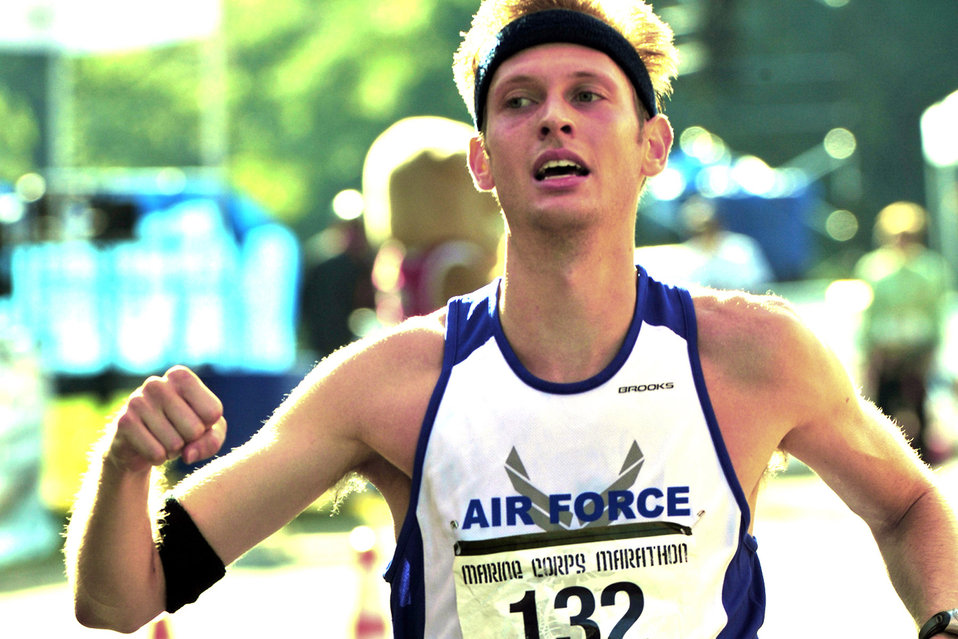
Eat my dust...

1st Lt. Brian Dumm crosses the finish line first for the All-Air Force team in the 33rd Marine Corps Marathon Oct. 26 with a time of 2 hours, 25 minutes, 58 seconds. He was fifth overall, and is stationed at Royal Air Force Molesworth, England.